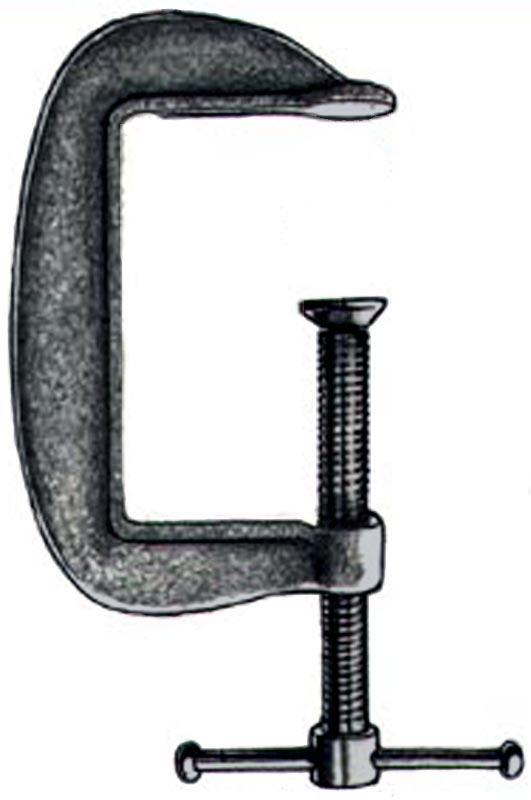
A G clamp